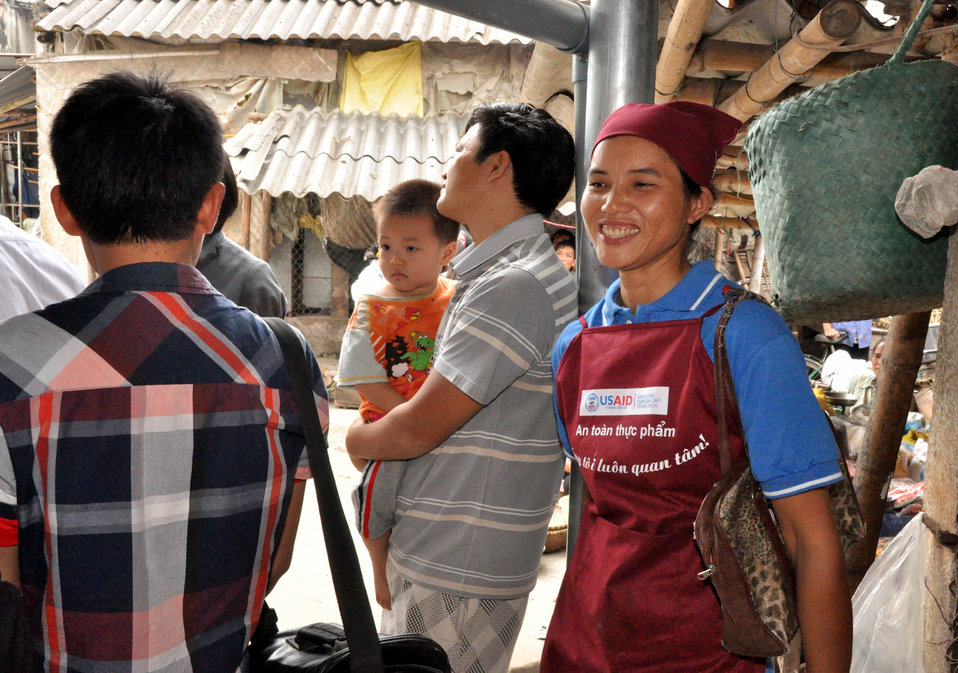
Handover Ceremony Hoa Mac Market Ha Nam

October 26, 2012